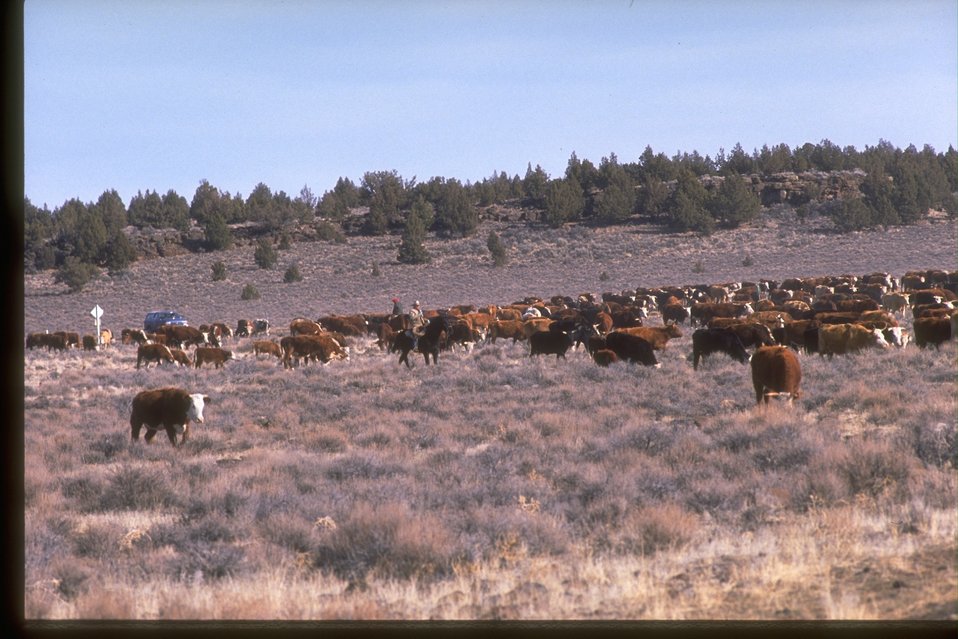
Cattle drive on rangeland.